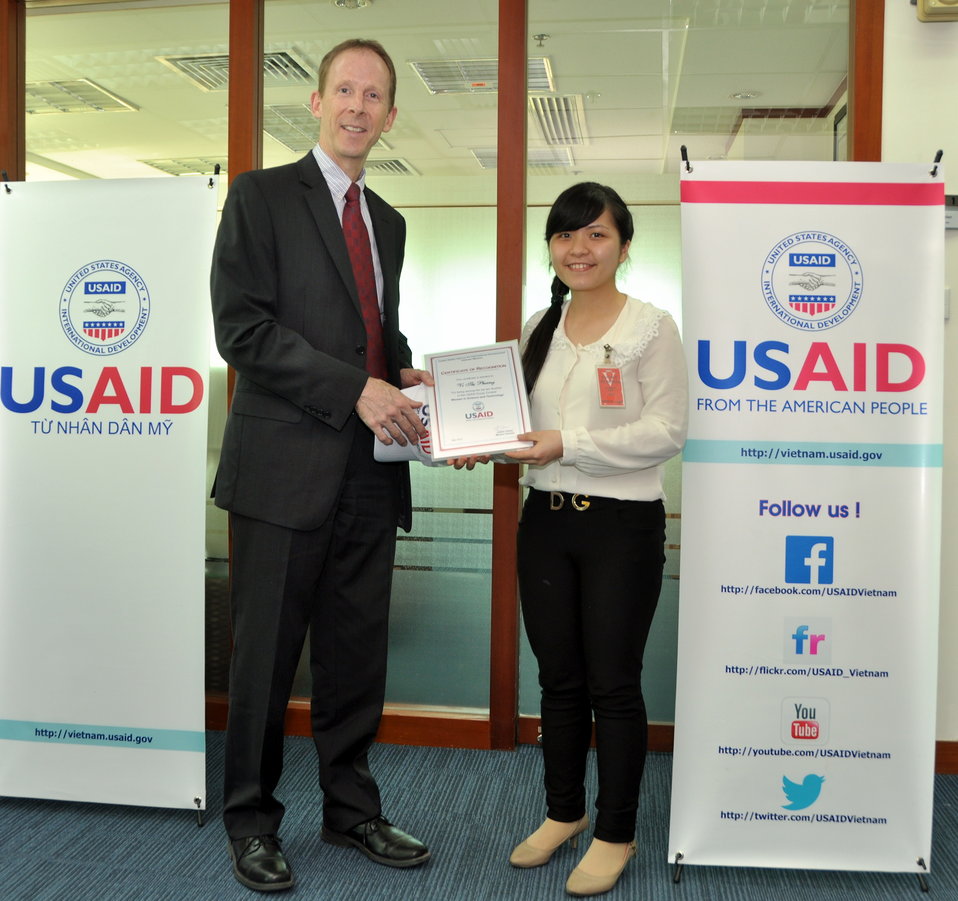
Women in Science and Technology Essay Contest Award Ceremony

USAID Mission Director Joakim Parker awards a certificate of recognition to Ms. Vi Thi Phuong, a student from Hanoi University, who is among top 10 finalists in the USAID Women in Science and Technology Essay contest, on May 16, 2013.